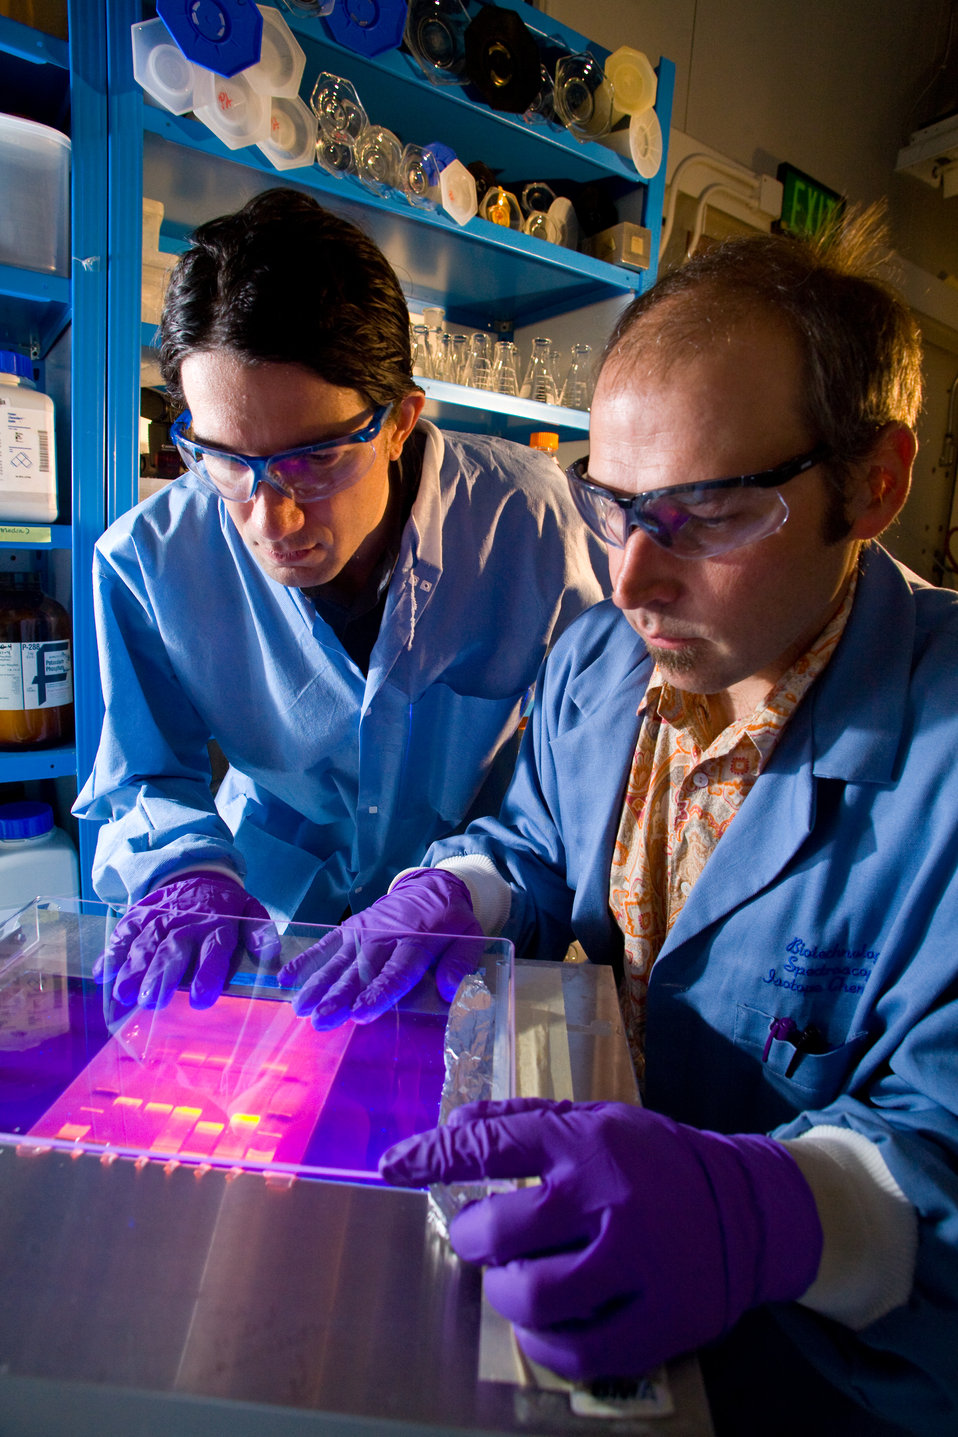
RESEARCHERS AT WORK AT THE NATIONAL STABLE ISOTOPE RESOURCE AT LOS ALAMOS NATIONAL LABORATORY (LANL) TO UNDERSTAND HOW RIBONUCLEIC ACID MOLECULES ACT AS GENETIC SWITCHES TO REGULATE PROTEIN SYNTHESIS.